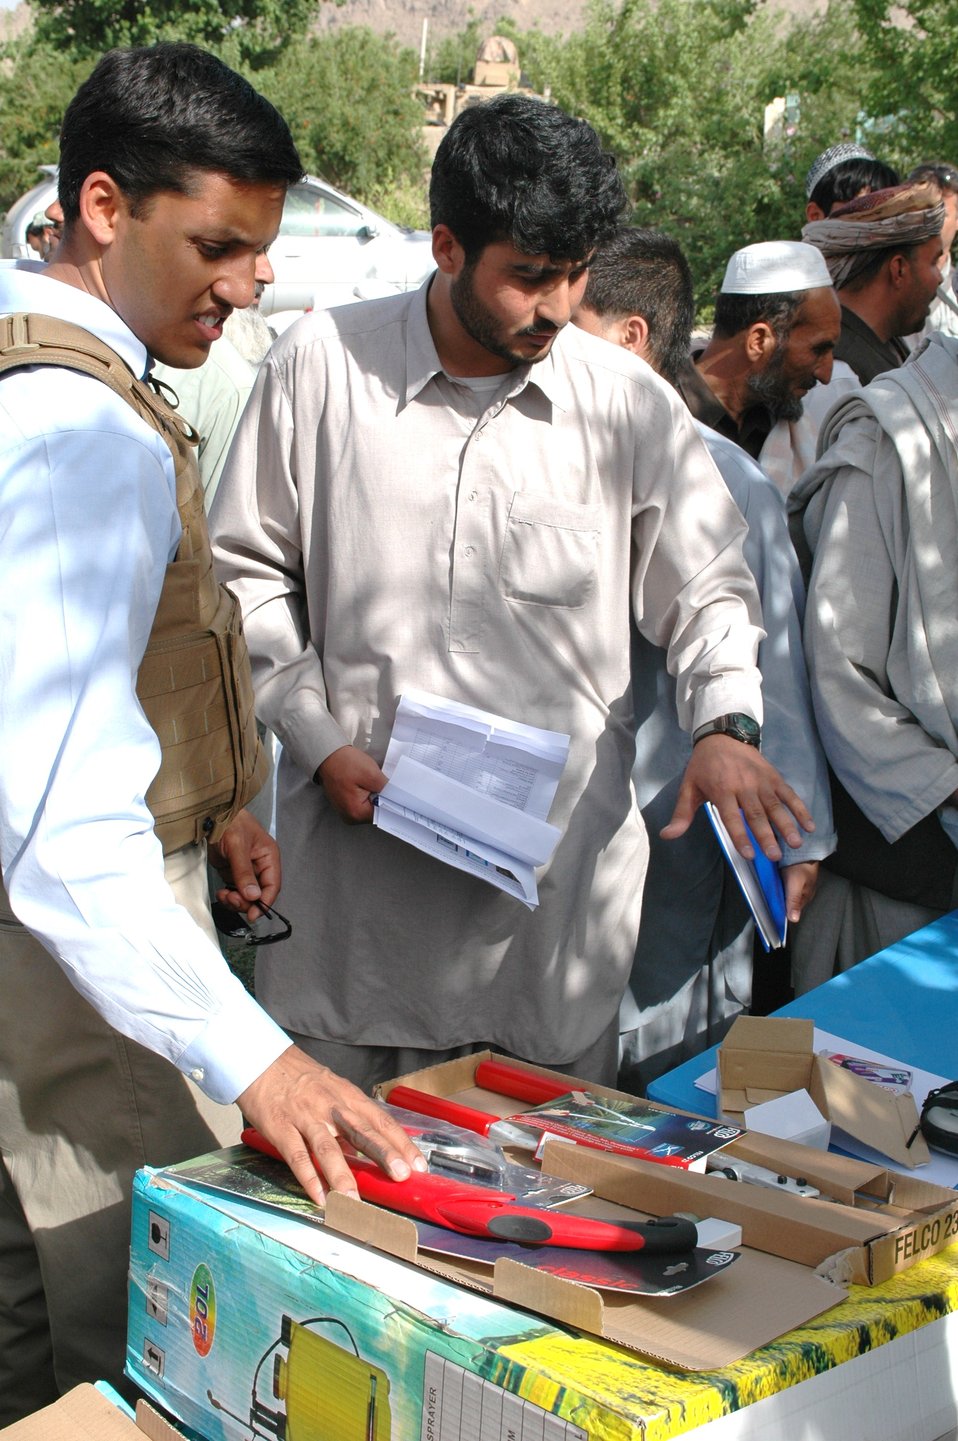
Dr Shah Visits Argandab April 10, 2010